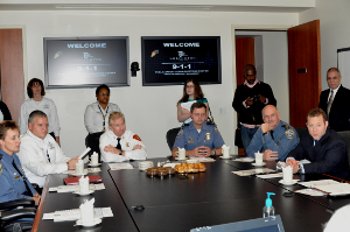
Next gen conference

Next Generation 9-1-1; Arlington, VA. November 23, 2010